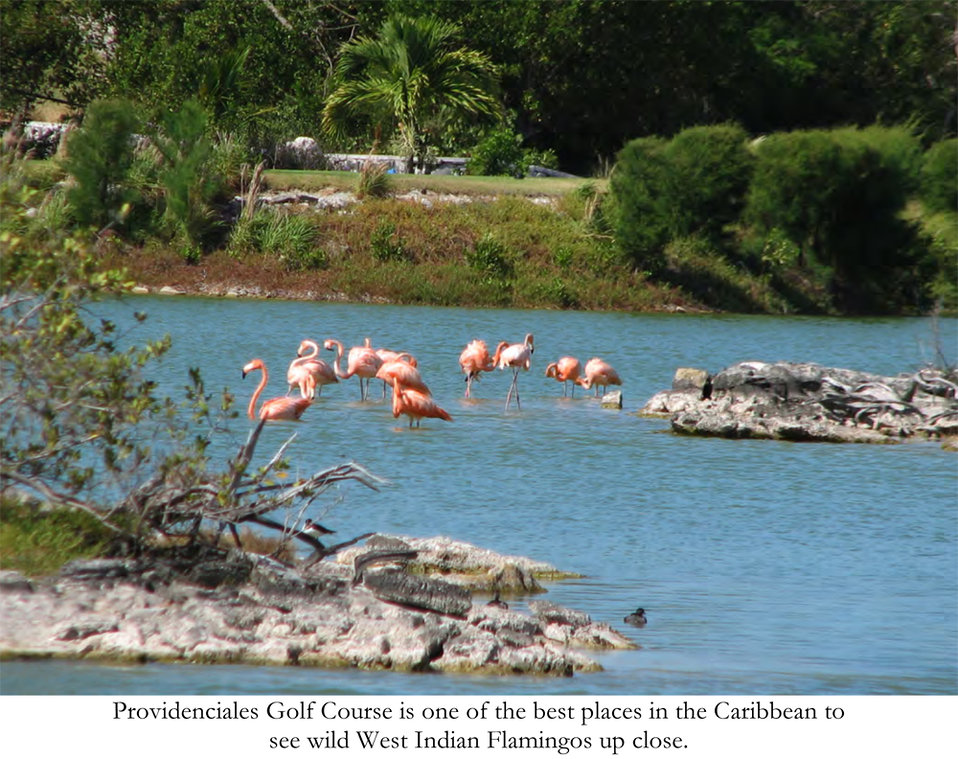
SCSCB-FWS-Interim-Report-2011